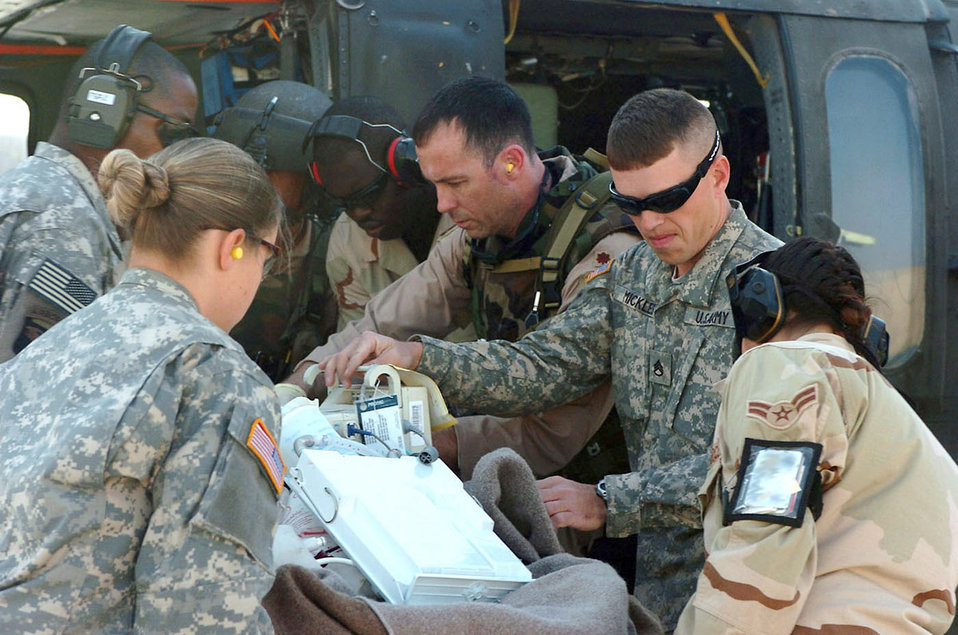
Theater hospital

BALAD AIR BASE, Iraq (AFPN) -- Airmen and Soldiers unload a patient from a helicopter at the Air Force theater hospital here. Service members who are wounded in Iraq and need to be medically evacuated come to this hospital.